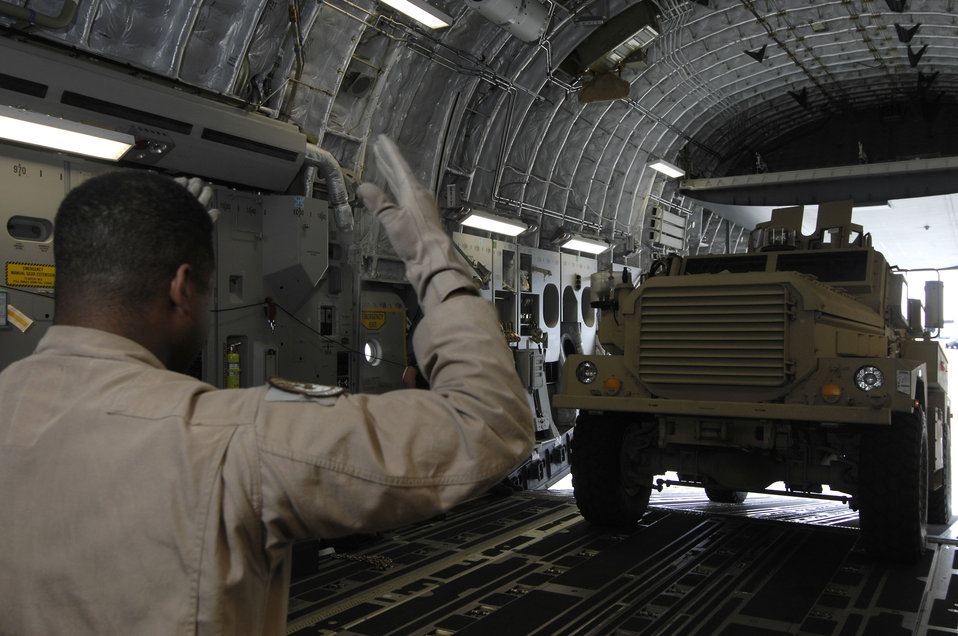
C-17 Reaches Across the Globe

Tech Sgt. Andre Stollenwer, assigned to the 535th Airlift Squadron, Hickam Air Force Base, Hawaii, guides a Marine-owned Mine Resistant Ambush Protected vehicle into a C-17 Globemaster III with the aid of Kadena Air Base, Japan, transportation Airmen while at Kadena on Dec. 29, 2008. The vehicle will be taken to Bagram Airfield, Afghanistan, and moved further in the theater afterward. The C-17 crew started out at Hickam AFB and this mission illustrates the global reach capabilities of the Air Force across the globe.